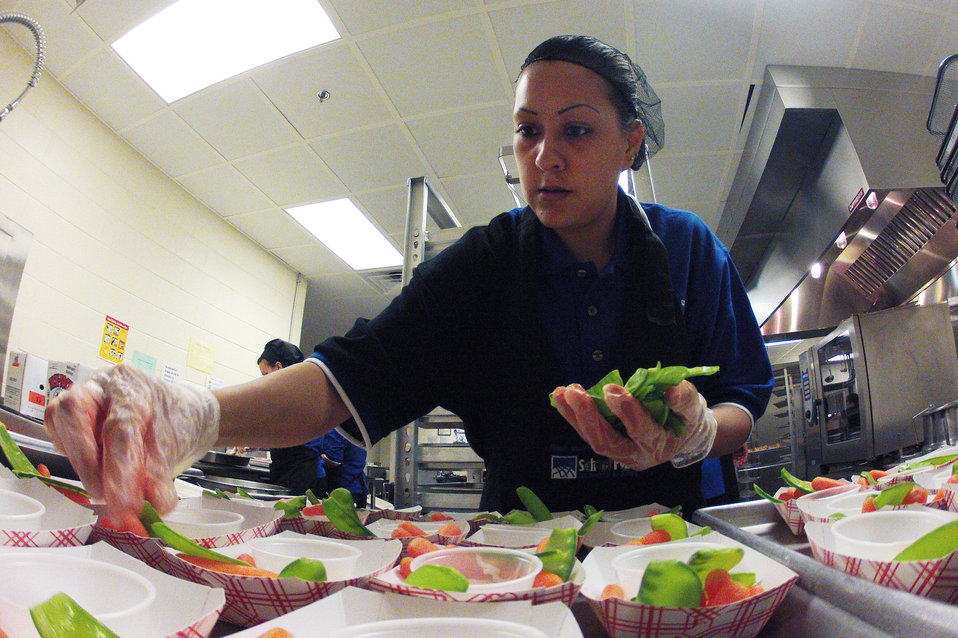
School lunch staff and students enjoy the new school lunch menu created to meet the new standards at the Yorkshire Elementary School in Manassas, VA on Friday, Sept. 7, 2012.